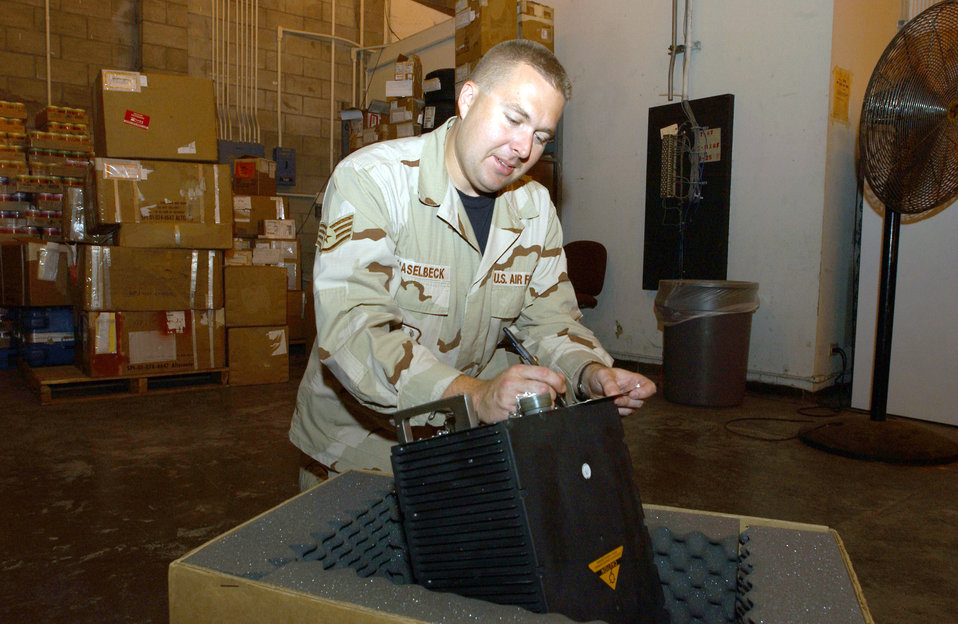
Airmen keep base supplied

OPERATION ENDURING FREEDOM -- Staff Sgt. Kurt Haselbeck inventories aircraft parts received at the supply warehouse at this forward-deployed location. He is assigned to the 40th Expeditionary Logistics Readiness Flight and is deployed from Minot Air Force Base, N.D.